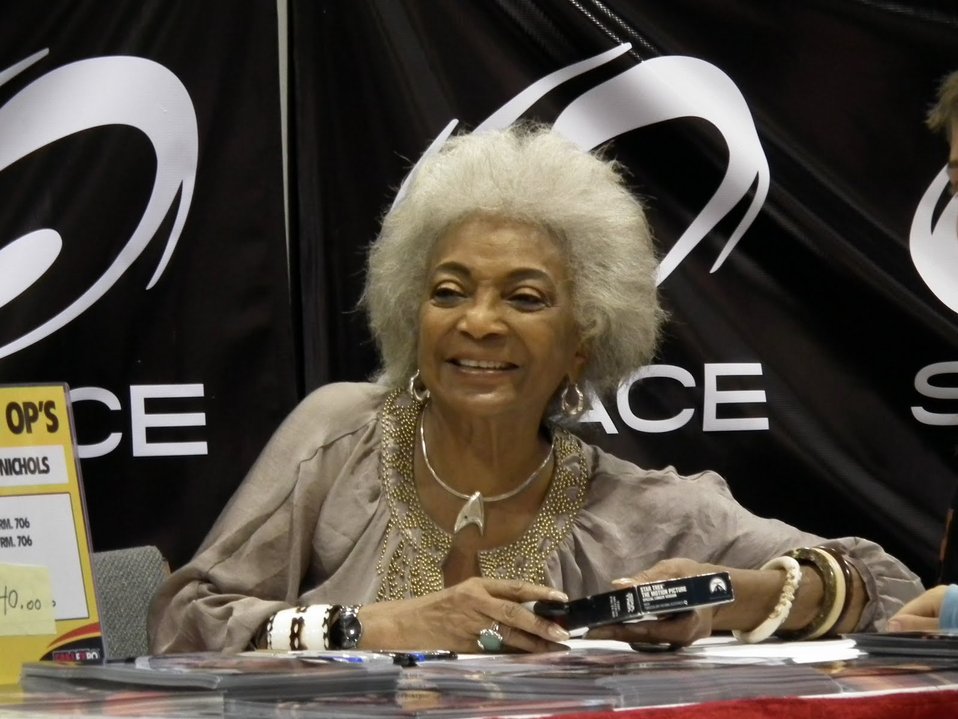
Nichelle Nichols who played Lt. Uhura on the original Star Trek series